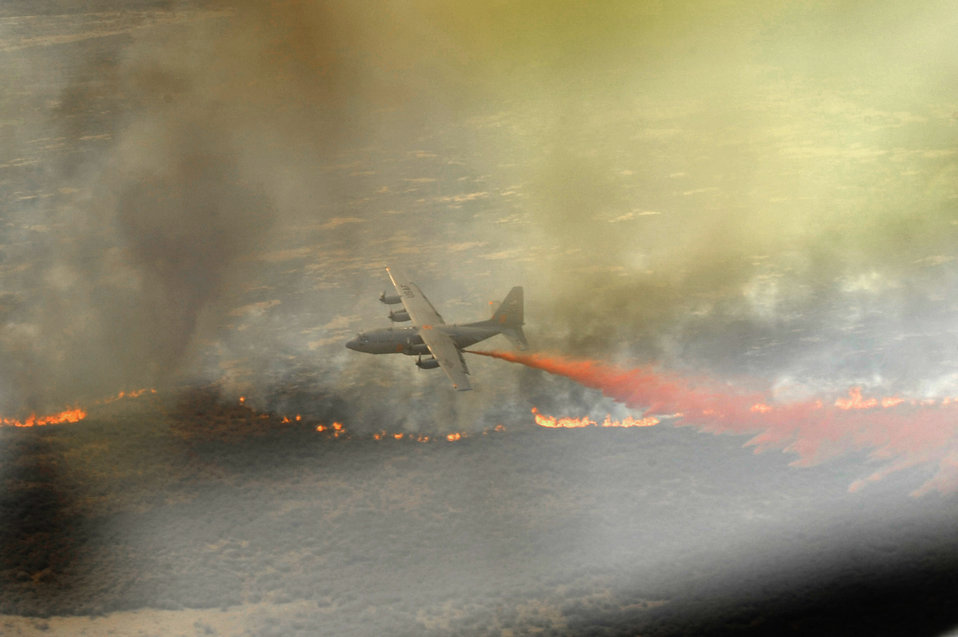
Firefighting operations conclude

A C-130 Hercules, equipped with the Modular Airborne Firefighting System, drops fire retardant April 27, 2011, above West Texas. MAFFS is capable of dispensing 3,000 gallons of water or fire retardant in less than 5 seconds.